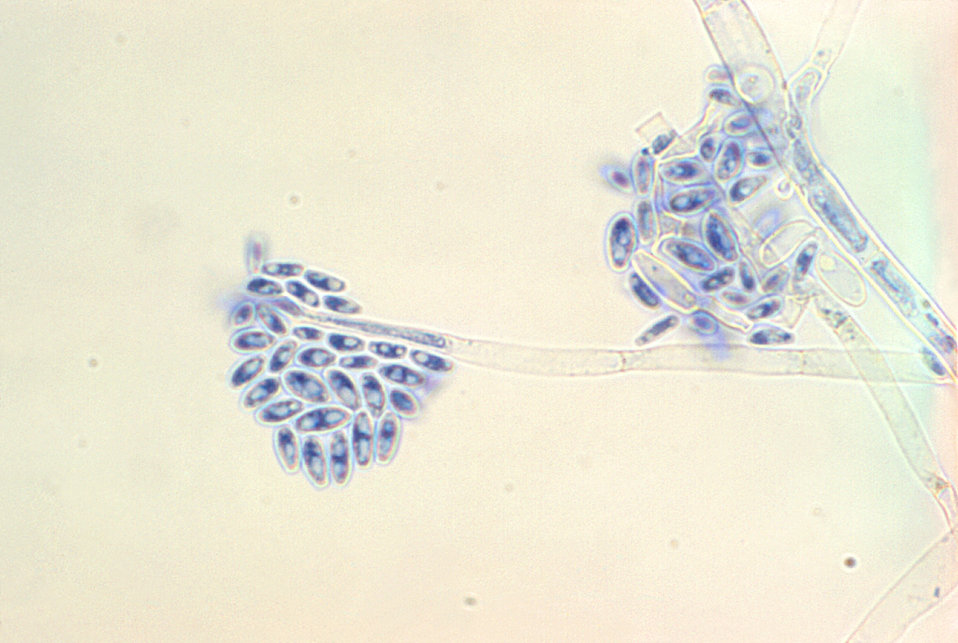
Magnified 1000X, this photomicrograph revealed some of the ultrastructural morphology exhibited by two multiseptate, unbranched conidiophores of the fungal organism, Acremonium falciforme, each topped by a cluster of curved conidia.